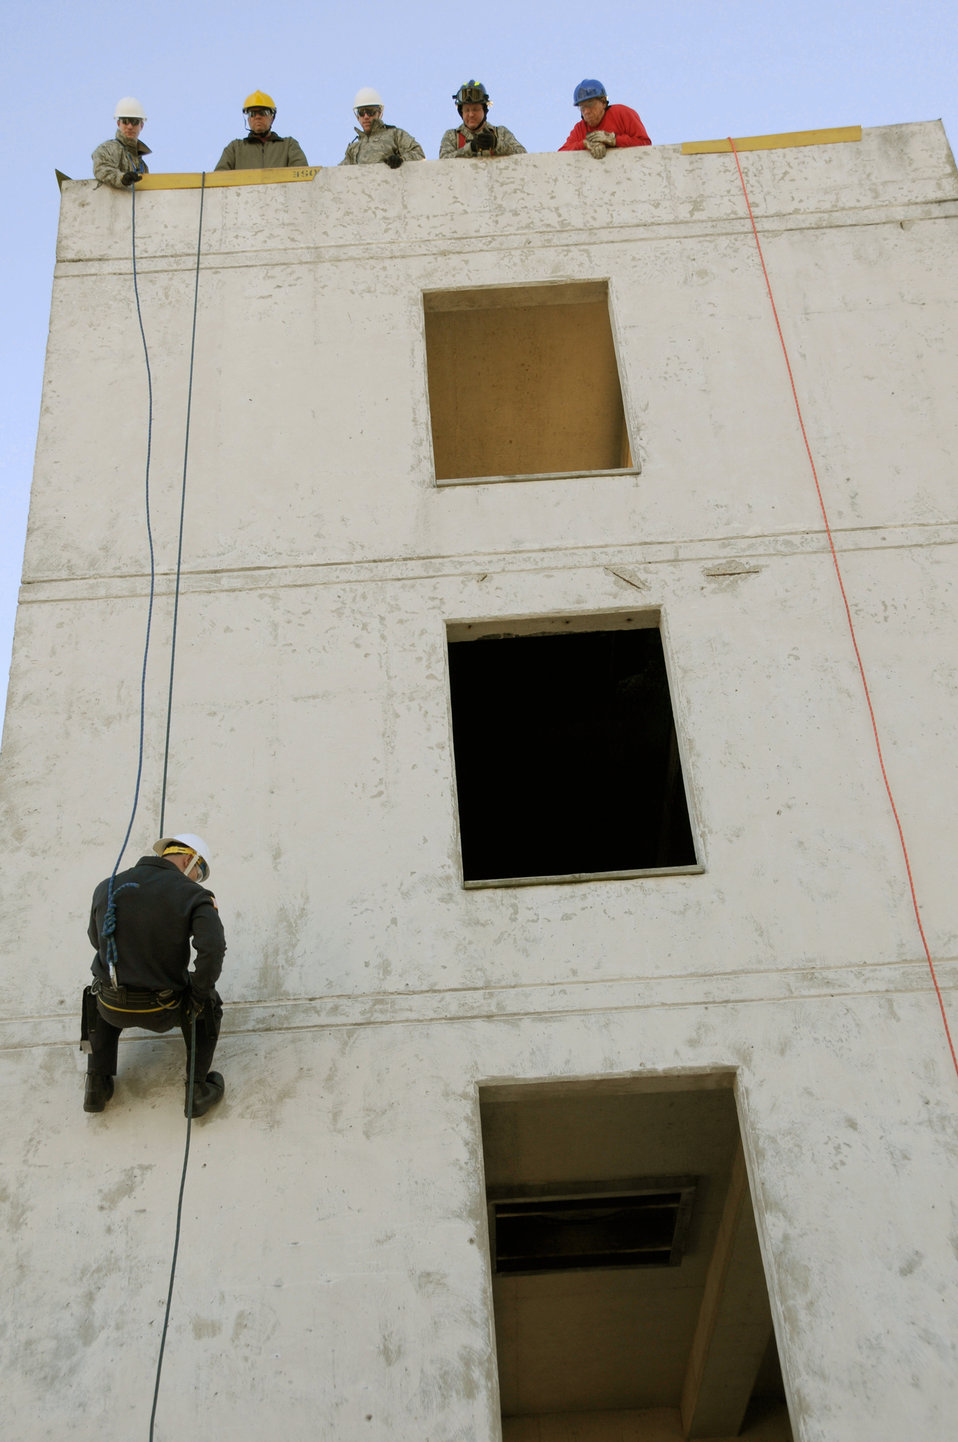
Don't look down

Firefighters from the Ohio Air National Guard's 180th Fighter Wing rappel down the side of a training facility Oct. 7, 2010, at the Toledo Fire and Rescue Department Training Academy in Ohio. Firefighters are participating in six days of training to prepare for various rescue situations.